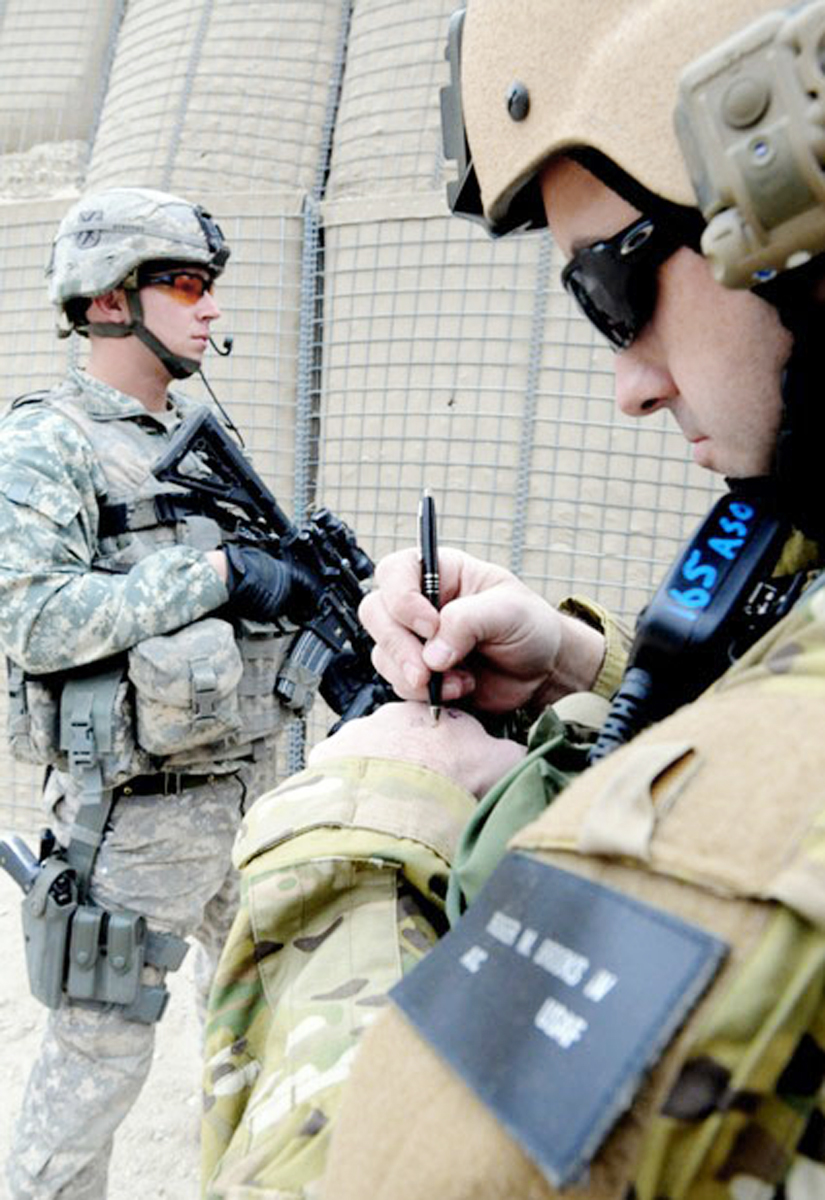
Georgia Air Guard teams with Army unit in Afghanistan

Capt. Roger M. Brooks IV takes coordinates at an Afghan border police observation post in the mountains of Achin district in eastern Afghanistan's Nangarhar province, Dec. 20, 2009, as a tower guard provides over watch. Captain Brooks is the commander of a 12-man joint terminal attack controller team in Afghanistan.